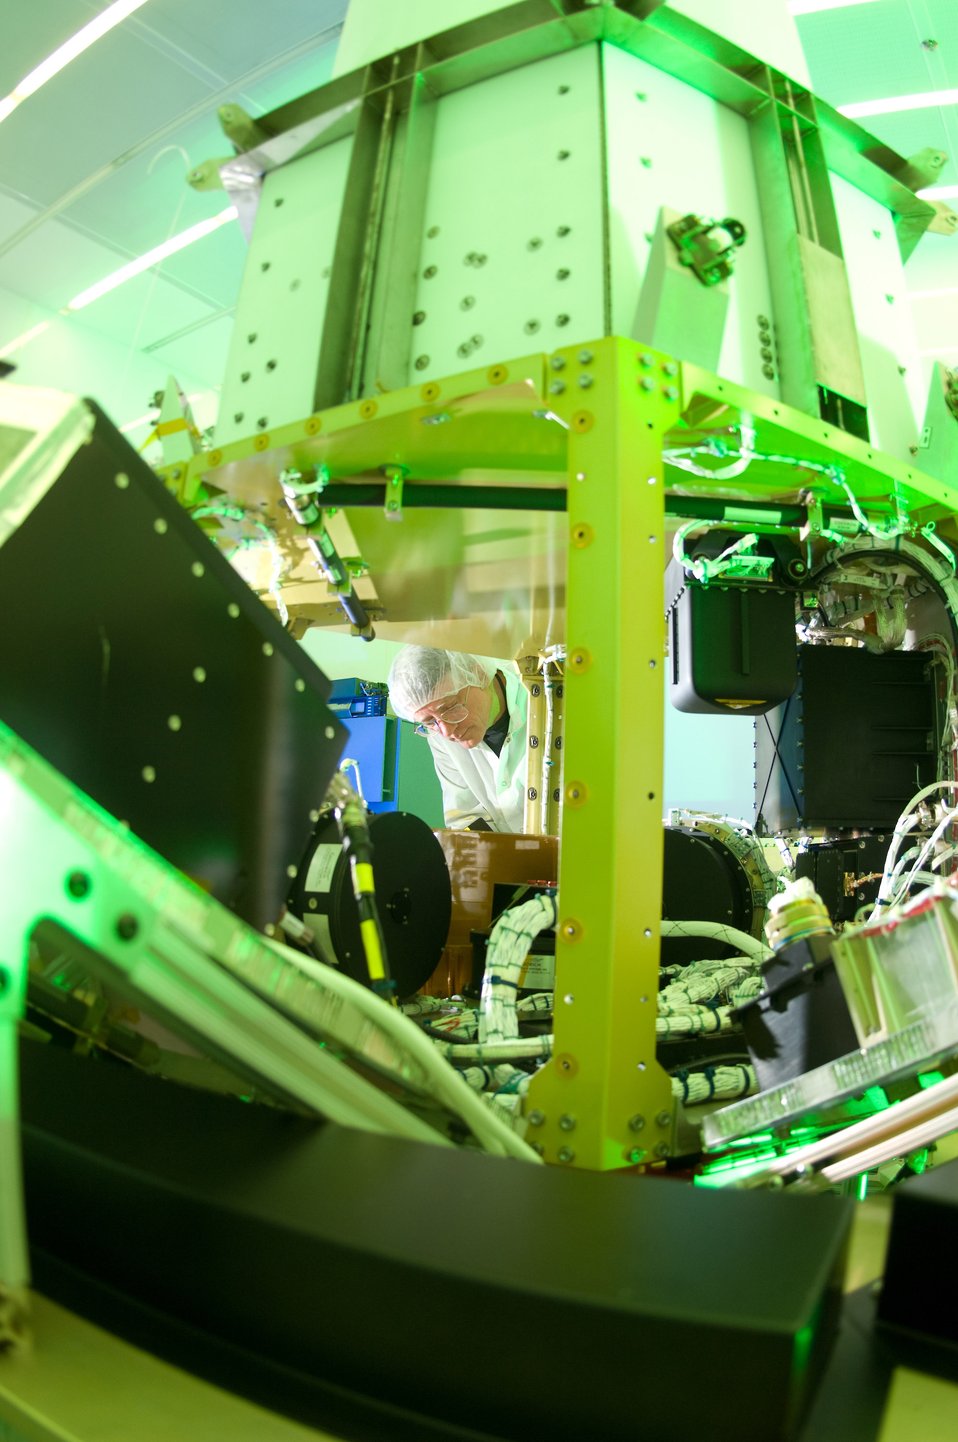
TacSat-3 Preparation

Martin Leahy performs voltage and continuity tests on a tactical satellite, known as Tactical Satellite-3, at the Space Vehicle Directorate at the Air Force Research Laboratory, Kirtland Air Force Base, N.M. The satellite is scheduled to be launched in October. Mr. Leahy is a field engineer with ATA Aerospace.